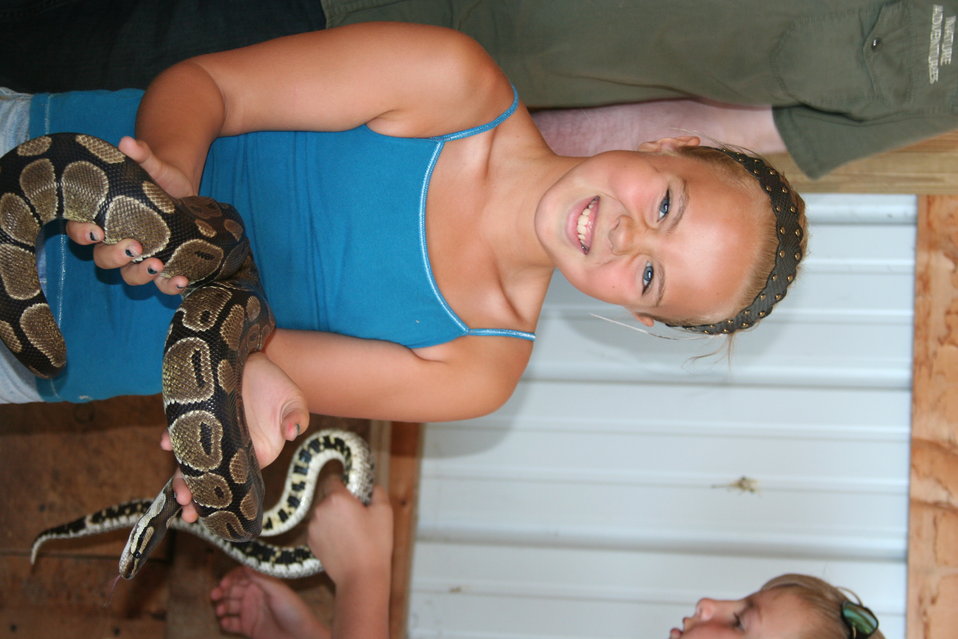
2011 Huron Prairie Fest

Some kids enjoying the amazing world of reptiles. The audience got to handle snakes, lizards, and turtles.